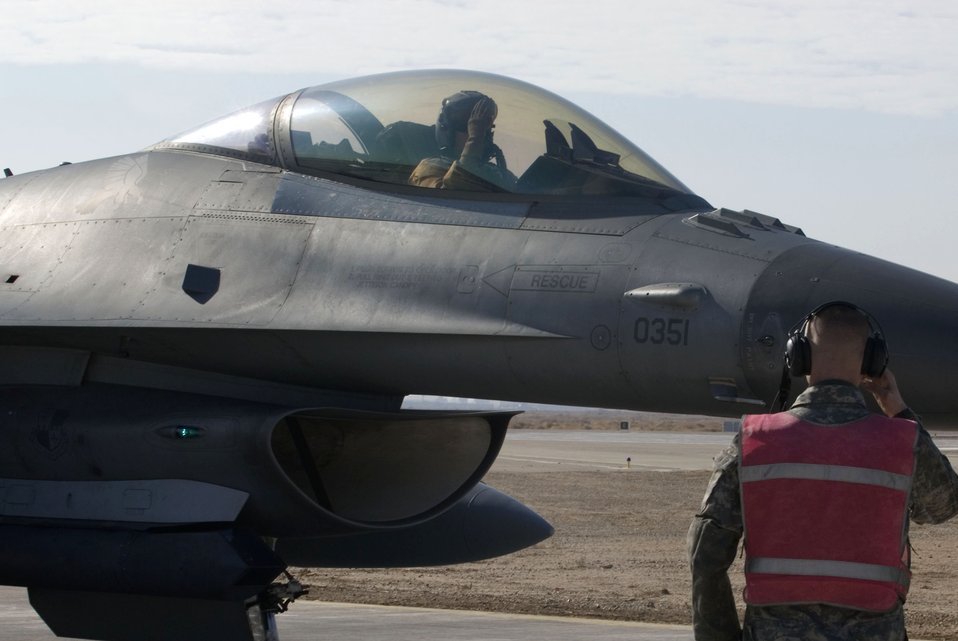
Airmen are 'bombarded'

Staff Sgt. Jeremy Lewis salutes Capt. Travis Keenan after the pilots aircraft is disarmed Jan. 19 at Balad Air Base, Iraq. Sergeant Lewis a 332nd Expeditionary Aircraft Maintenance Unit crew chief and Captain Keenan is a 22nd Expeditionary Fighter Squadron pilot. The F-16's munitions are armed and de-armed inside a pit to maintain safety and security. Both Airmen are deployed from Spangdahlem Air Base, Germany.